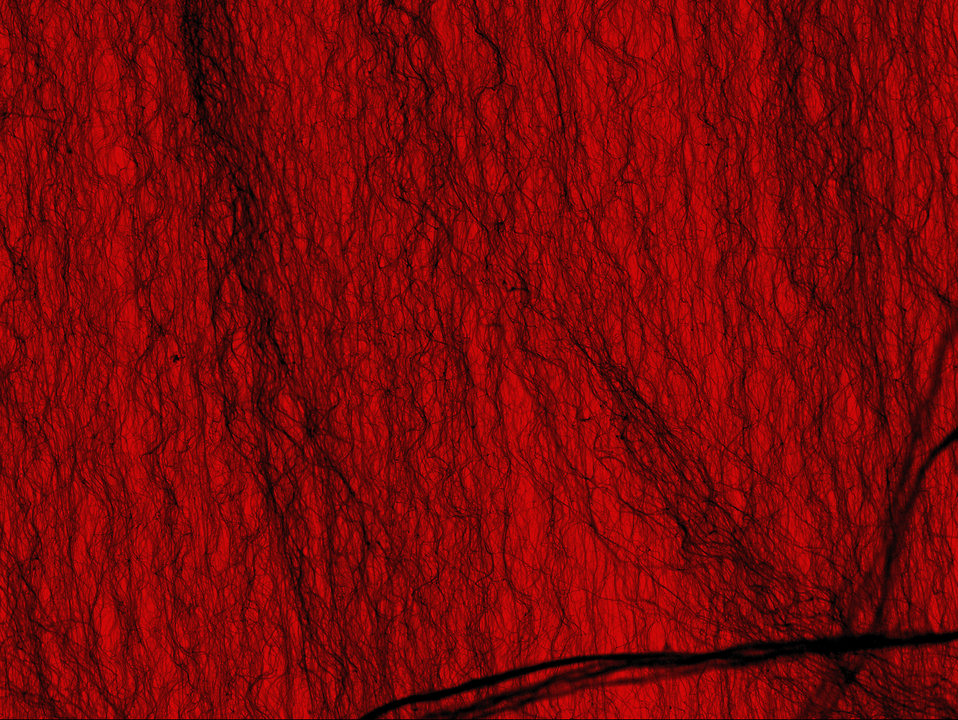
Nanotube; Ultradark

Colorized micrograph of the world's darkest material - a sparse 'forest' of fine carbon nanotubes - coating a NIST laser power detector. Image shows a region approximately 25 micrometers across.